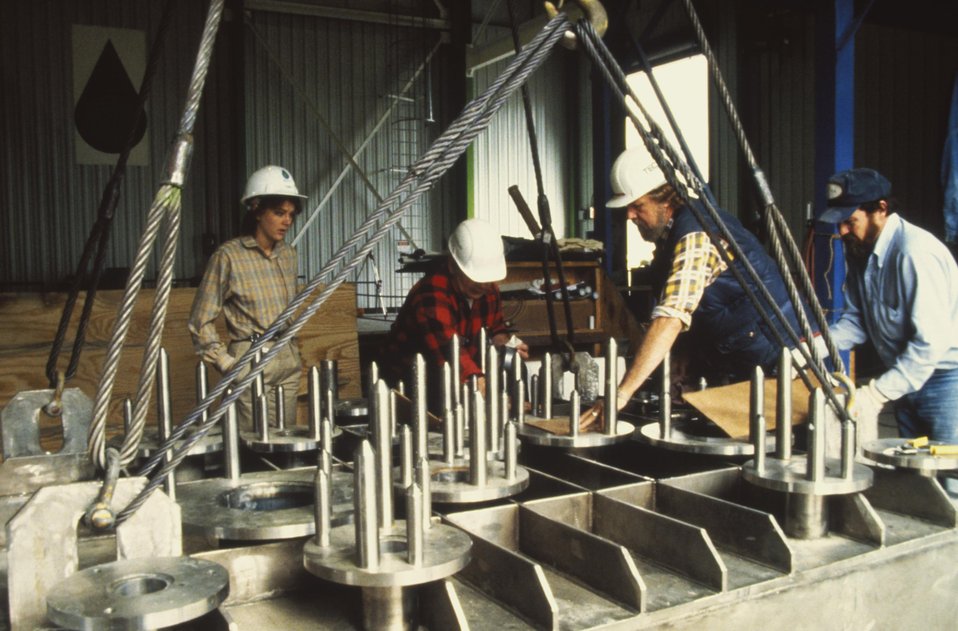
SITE CONTRACTORS AND ENGINEERS EXAMINE THE WEST VALLEY DEMONSTRATION PROJECT MELTER TOP.

BETWEEN 1966 AND 1972, SOME 600 METRIC TONS OF SPENT NUCLEAR FUEL WERE REPROCESSED AT THE NUCLEAR FUEL SERVICES, INC. PLANT IN WEST VALLEY, NEW YORK. THE FUEL RODS WERE CONVERTED INTO A SLUDGE WHICH WAS STORED IN UNDERGROUND TANKS ON THE SITE. AT THE TIME OF THE PLANT'S CLOSING, 600,000 GALLONS OF HIGH-LEVEL RADIOACTIVE LIQUID WASTE WERE STORED IN THE TANKS. TODAY, THE FACILITY, RENAMED THE WEST VALLEY DEMONSTRATION PROJECT, IS BEING USED TO ILLUSTRATE TECHNIQUES FOR THE SOLIDIFICATION AND PREPARATION OF HIGH-LEVEL WASTE FOR PERMANENT DISPOSAL. TECHNICIANS WILL CONVERT THE RADIOACTIVE SLUDGE INTO A SAFE GLASS SOLID (BOROSILICATE GLASS) USING A SLURRY-FED CERAMIC MELTER. SELECTED AREAS OF THE REPROCESSING FACILITY ARE BEING DECONTAMINATED AND MODIFIED FOR THE PROJECT, AND PLANNING HAS BEEN COMPLETED FOR MAJOR REFURBISHMENTS IN OTHER KEY AREAS NEEDED TO SUPPORT IT. SOLIDIFICATION OF THE HIGH-LEVEL WASTES AT WEST VALLEY IS EXPECTED TO BE COMPLETED IN 1990.